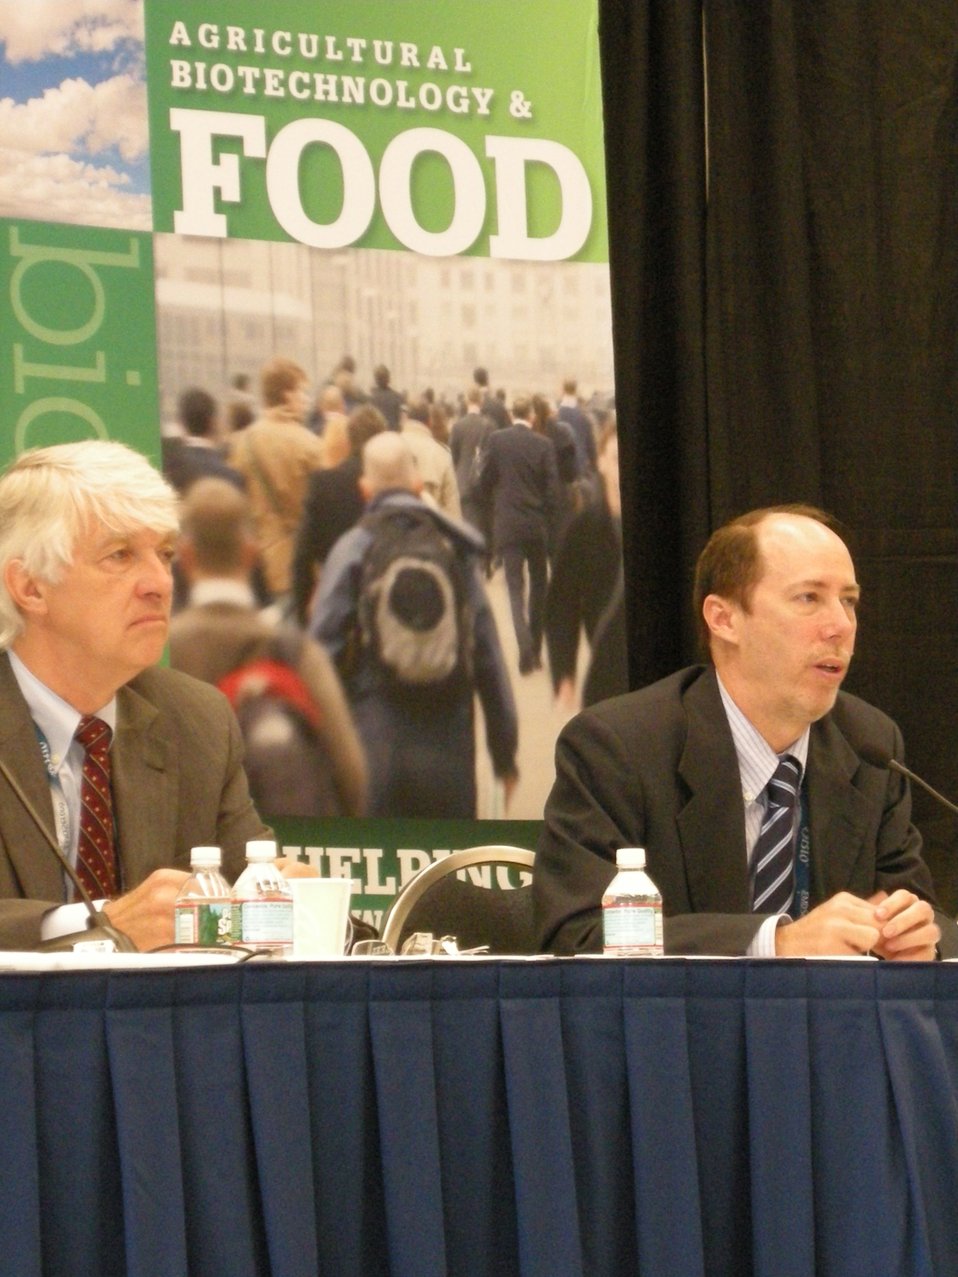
Senior Advisor Bobo Participates in a Panel of Biotech Experts

Jack Bobo, Senior Advisor for Biotechnology, participates in a panel of biotech experts for a media breakfast at the 2011 BIO International Convention on U.S. Agricultural Policies on June 29, 2011, in Washington, D.C. Senior Advisor Bobo; Dr. Roger Beachy, Former Director of the National Institute for Food and Agriculture; and Chairman of the National Association of Wheat Growers Scott Swenson discussed the impact of U.S. agricultural policies and regulations on investment in agricultural innovations and America’s economic growth.